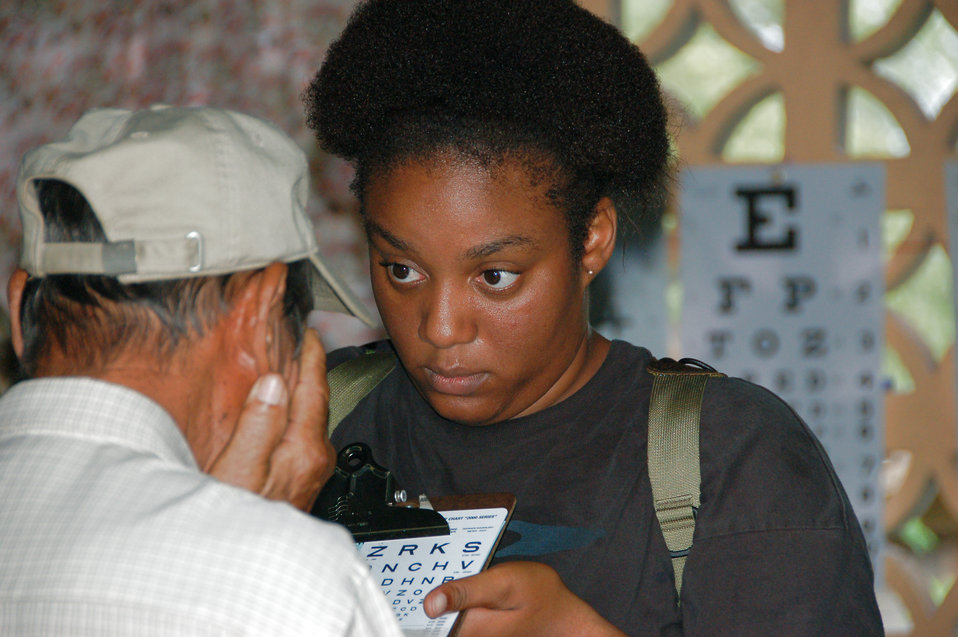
Managed Confusion

Staff Sgt. Craikista D. Foster administers an eye-chart test to a local resident at a school in Cabuya, Panama, during a Medical Readiness Training Exercise-Panama, July 15. Sergeant Foster is a technician from the 42nd Medical Group at Maxwell Air Force Base, Ala. The MEDRETE is a two-week long U.S. Southern Command sponsored exercise designed to hone the skills of medical personnel, while providing free health care in remote locations through partnership with host nation doctors. Approximately 990 patients were seen by the medical staff at the Cabuya location July 14-15.